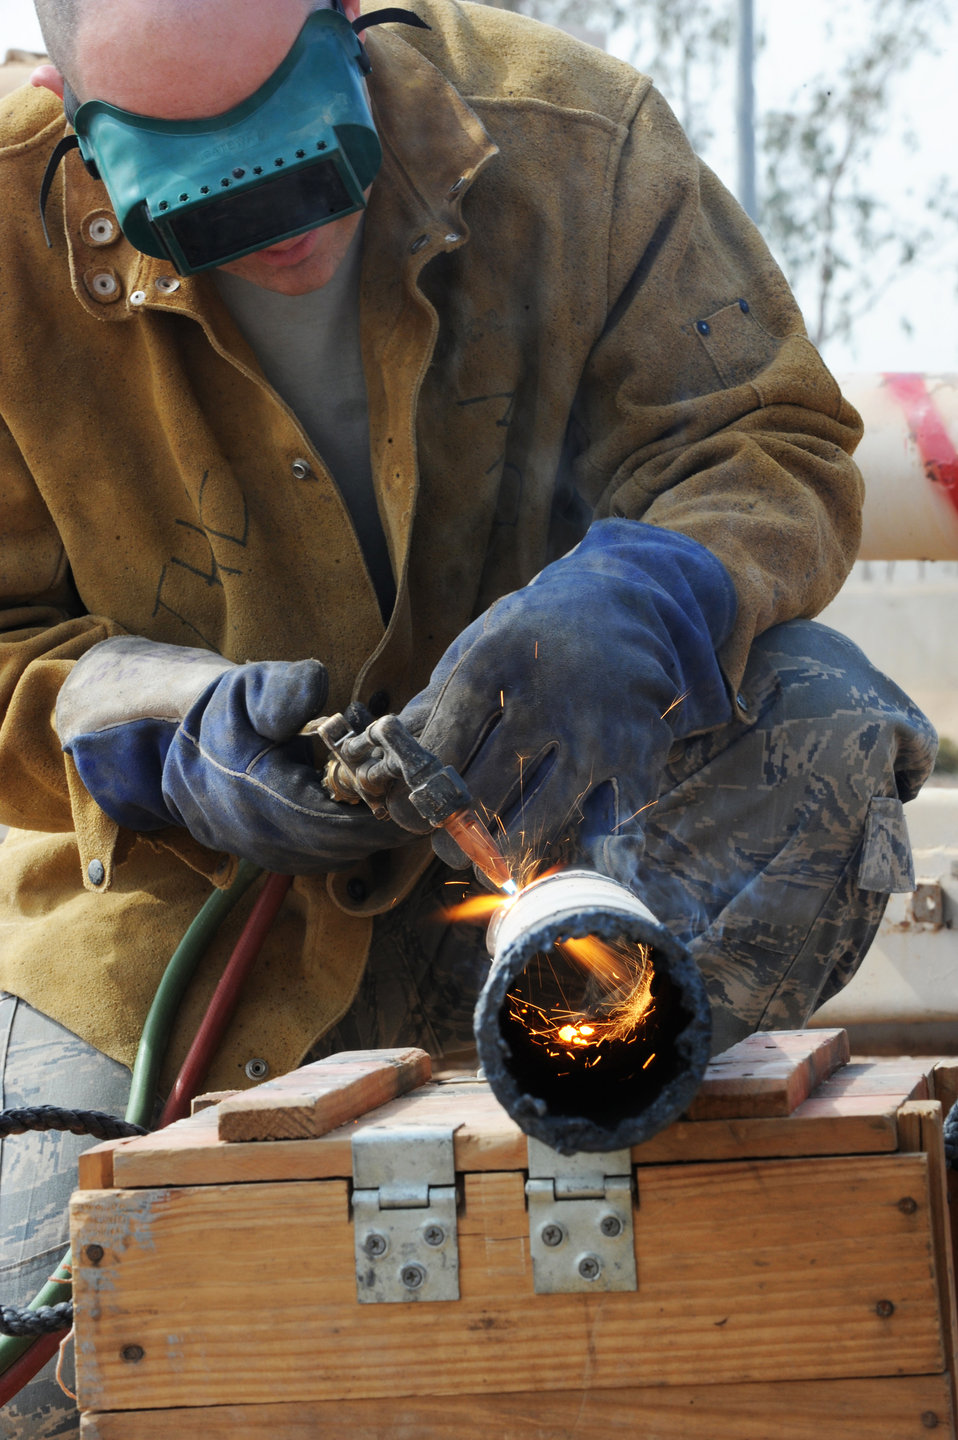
Security forces destroy Iraqi weapons for base security

Tech. Sgt. Roy Hurd uses an oxy-acetylene torch to cut up enemy weapons at Joint Base Balad, Iraq, March 18. The weapons, which were turned in by units and are being destroyed so they cannot be used against coalition forces or Iraqis. Sergeant Hurd is a 332nd Expeditionary Civil Engineer Squadron structural journeyman.